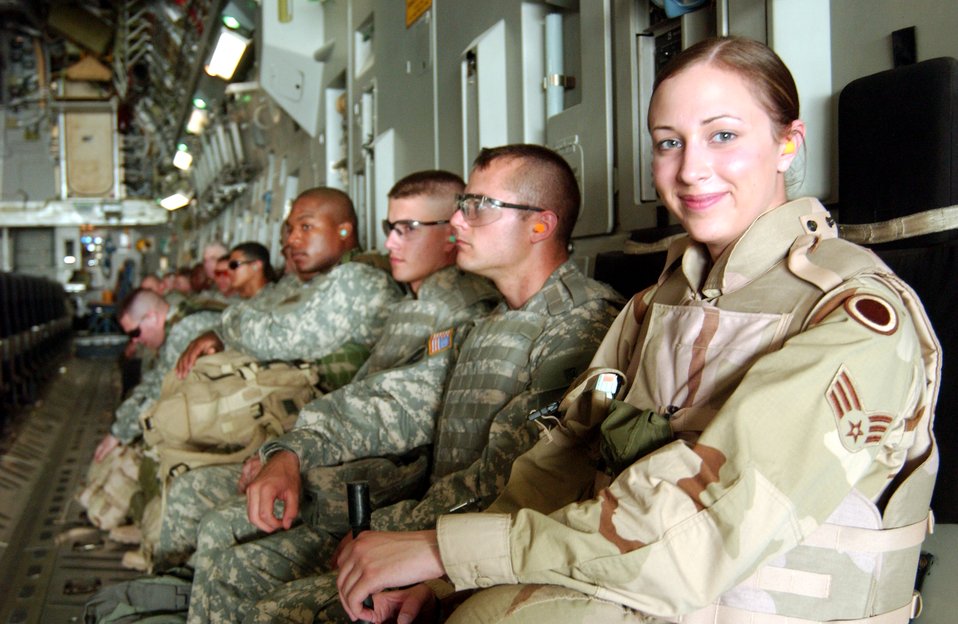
On the flightline at Sather Air Base

Senior Airman Deanna Marks and several Soldiers await take-off on a C-17 Globemaster III at Sather Air Base, Iraq. Airman Marks is assigned to the 1st Weather Squadron.